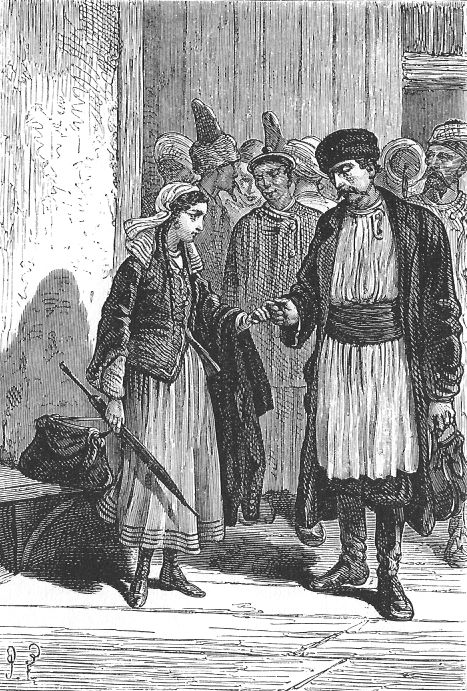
An illustration from the novel 'Michael Strogoff: The Courier of the Czar' by Jules Verne drawn by Jules Férat. Polski: Ilustracja powieści Juliusza Verne'a 'Michał Strogow, kurier carski' autorstwa Julesa Férata. Français : 'Michel Strogoff. Le courier du tzar', Jules Férat. Français : « Soeur », dit-il.